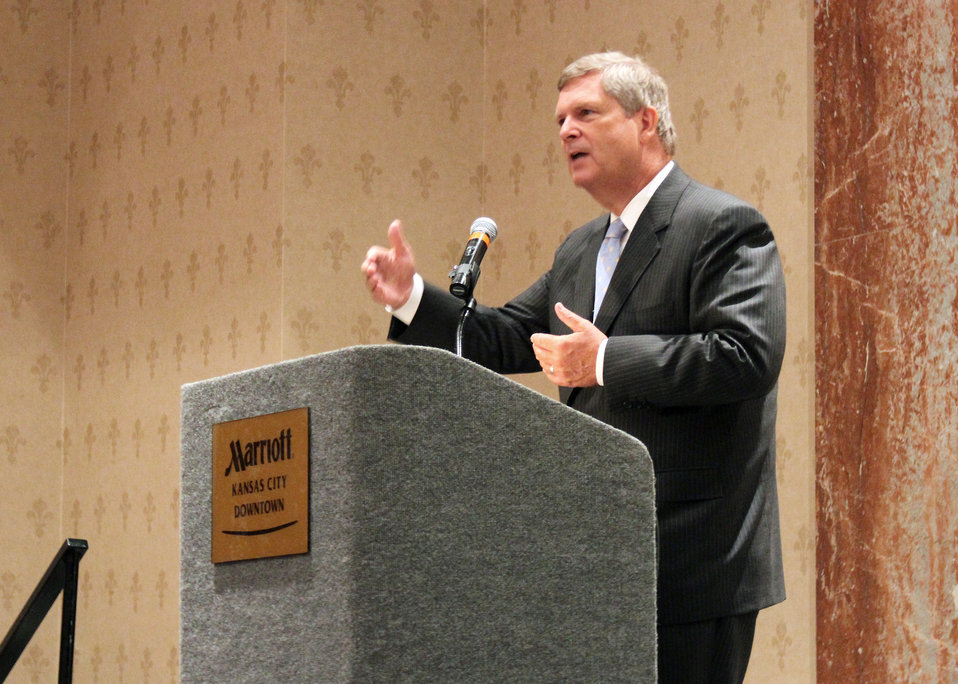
The theme of the 2011 Rural Philanthropy Conference is “Innovate, Implement, Impact.” The nation’s top innovative philanthropic leaders convened in Kansas City, MO, from July 25-27, 2011. The conference provided foundation leaders with the tools and knowledge required to capture new resources, engage in the arena of public policy, and address the unique challenges of rural economies. Agriculture Secretary Tom Vilsack gave the closing speech at the 2011 Rural Philanthropy Conference held at the Marriott in Kansas City, MO on Wednesday, July 27, 2011. Secretary Vilsack discussed the crucial role philanthropy will play with the newly created White House Rural Council and how foundations have the ability to leverage private capital to invest in rural communities.